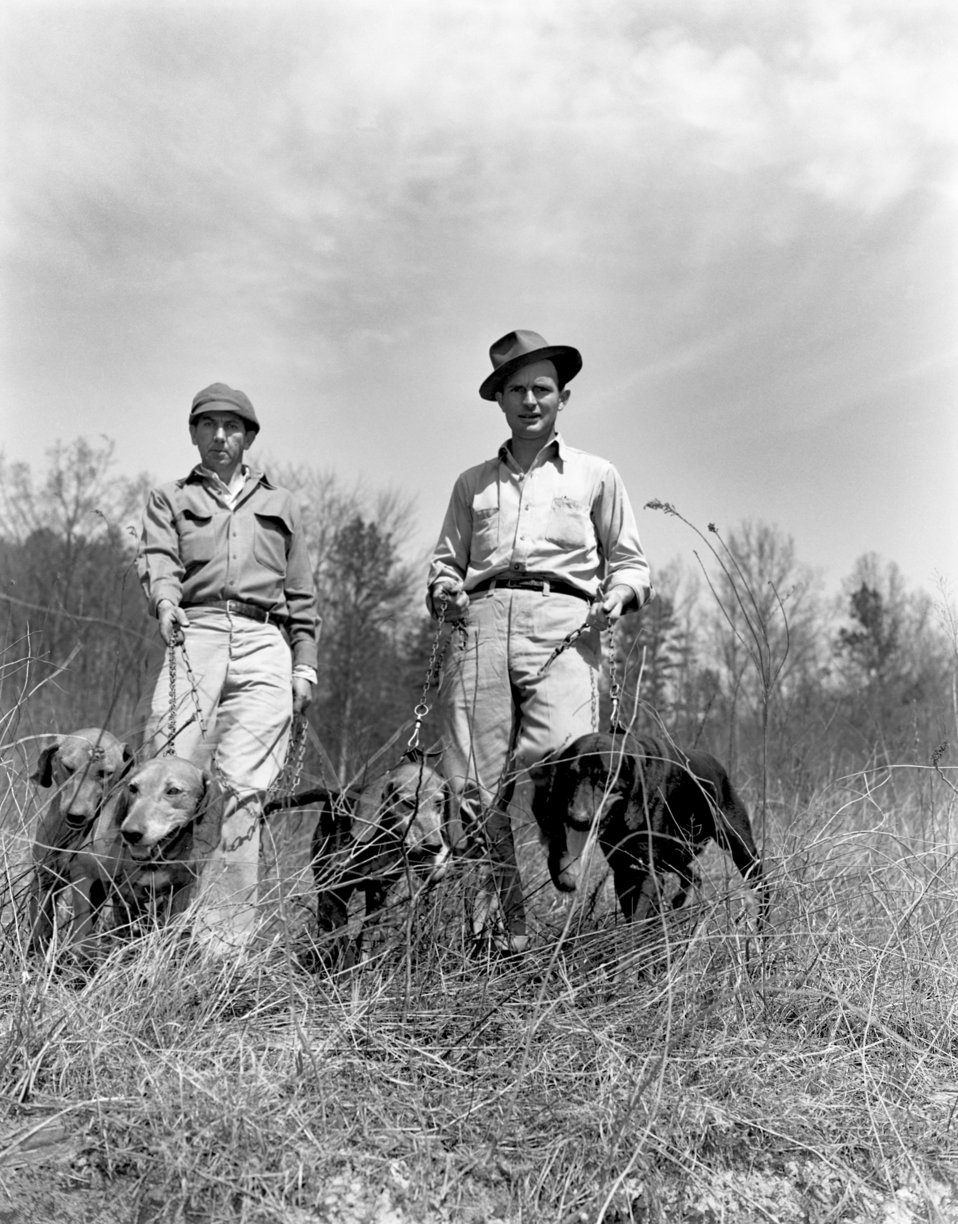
Coon Hunt (Raccoon Hunting) Oak Ridge 1947

3400-6a DOE photo Ed Westcott 4-12-1947 Oak Ridge Tennessee